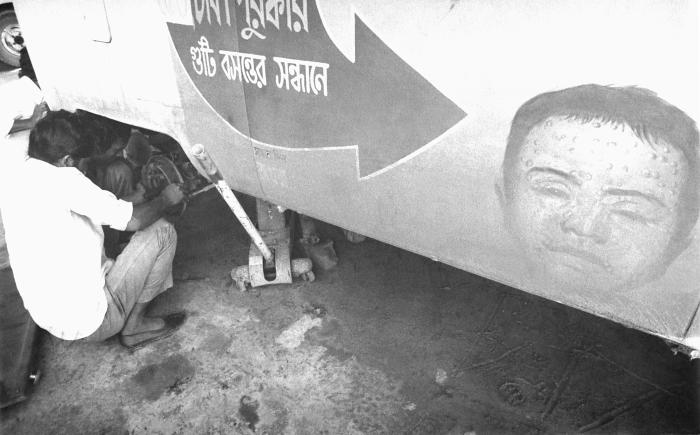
This image was part of a series provided by Dr. Stan Foster, and captured by Pierre Claquin, M.D., B.A.C., who at the time was a member of the World Health Organization's Smallpox Eradication Program. It was part of a series photographed by former E.I.S. officer, Stanley O. Foster M.D., M.P.H., and was one of a series entitled 'The Story of One Smallpox Jeep', which depicted the travails faced by the jeep, and its occupants of public health practitioners, as they road through the Bangladesh countryside in an attempt to eradicate smallpox from the country. Here, a mechanic was at work on the wheel of a motor vehicle with a picture of a child's face displaying the characteristic smallpox lesions. The child's picture, as well as notices describing the award given to those citizens who'd report a smallpox case were printed on the side of all motor vehicles such as this one, and displayed wherever possible through the townships.